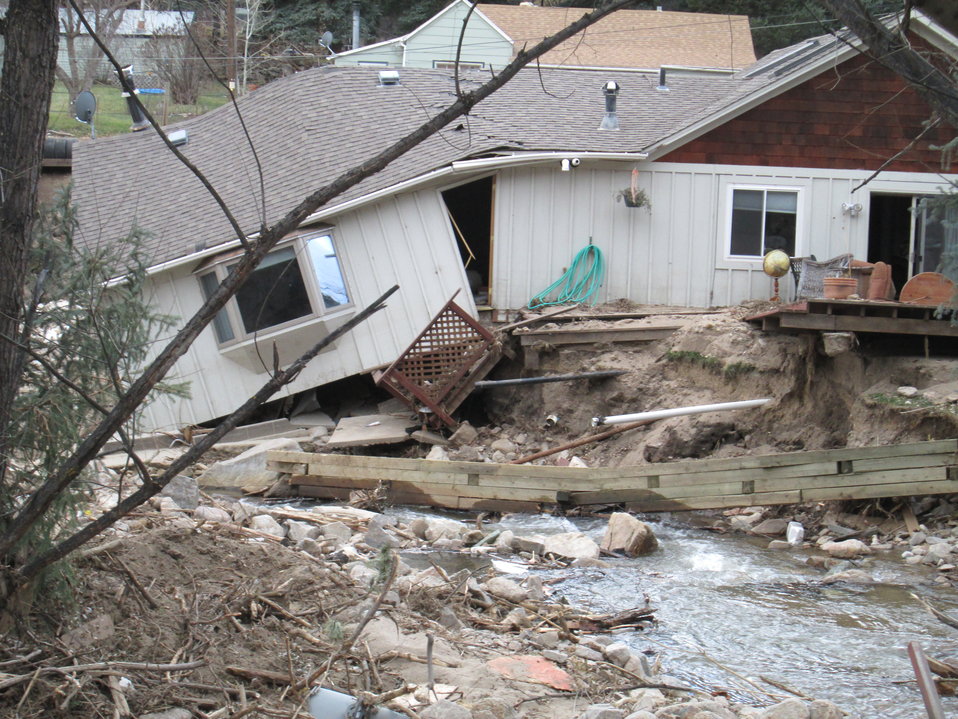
Jamestown, CO, November 19, 2013

Floodwaters shifted the channel for the James Creek and eroded the foundation of this Jamestown home, resulting in its partial collapse. The flooding damaged 18,000 homes and destroyed 1,500.